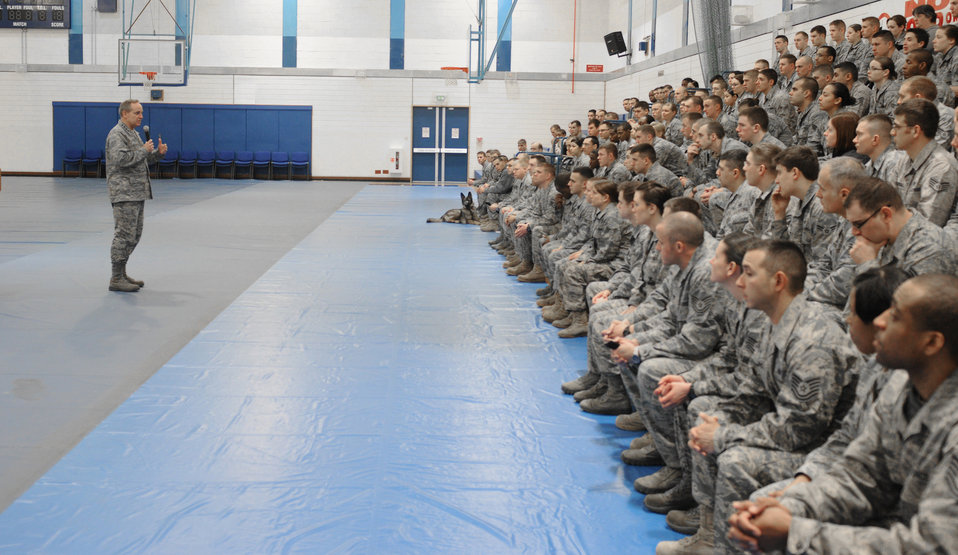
USAFE commander addresses 48th SFS Airmen about Frankfurt Shooting Incident

Gen. Mark A. Welsh III, the commander of U.S. Air Forces in Europe, speaks to 48th Security Force Squadron Airmen March 3, 2011, at Royal Air Force Lakenheath, England, regarding the shooting that occurred March 2, 2011, at Frankfurt International Airport, Germany. One of the two Airmen killed during the shooting was from the 48th SFS at RAF Lakenheath. The two wounded Airmen are also from the 48th SFS. The other Airman killed in the incident was from Ramstein Air Base, Germany.